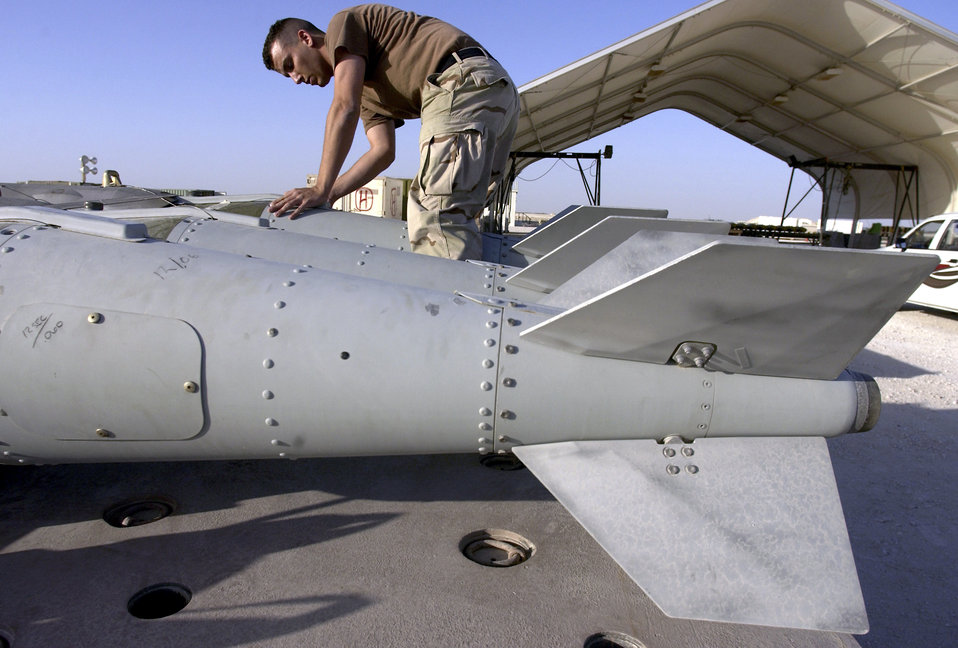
The work never ends

SOUTHWEST ASIA -- Airman 1st Class Stephen Church performs a post-load inspection of a Joint Direct Attack Munition at a forward-deployed location supporting Operation Iraqi Freedom.